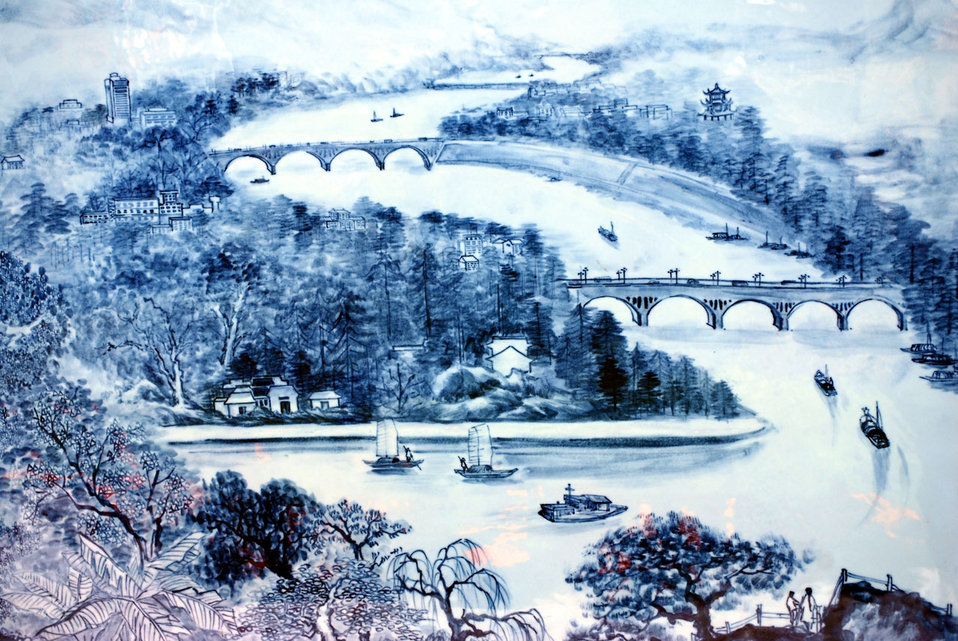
Chinese porcelain picture 3

A chinese picture made from porcelain.